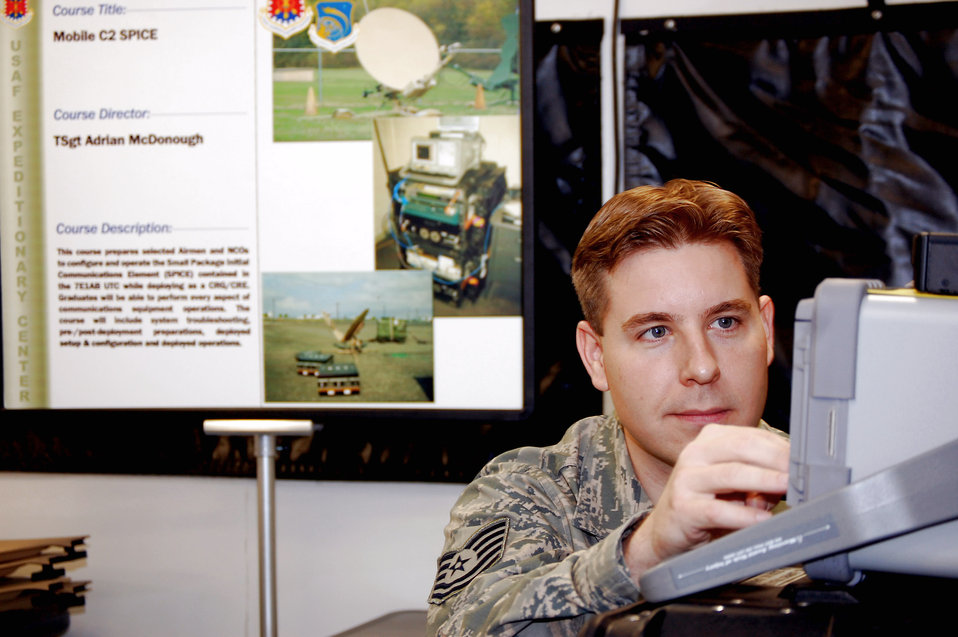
Expeditionary Center adding 'SPICE' to its curriculum

Tech. Sgt. Adrian McDonough prepares equipment in a Small Package Initial Communications Element package for use in the Mobility Operations School's mobile command, control and communications training facility on the expeditionary center campus Oct. 29 at Fort Dix, N.J. The SPICE Course is a new course in the MOS starting in February 2009. Sergeant McDonough is the course director for the U.S. Air Force Expeditionary Center's SPICE Course.